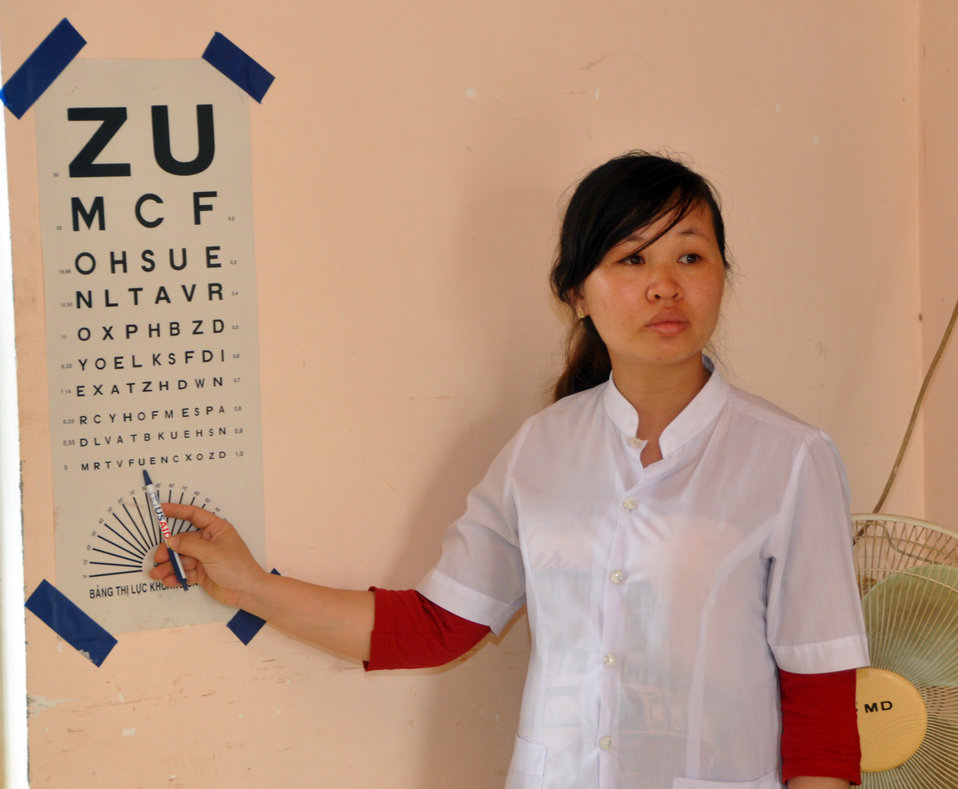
School children in Dak To, Kon Tum Province, receive eyeglasses under a program supported by USAID and partners HKI and World Learning